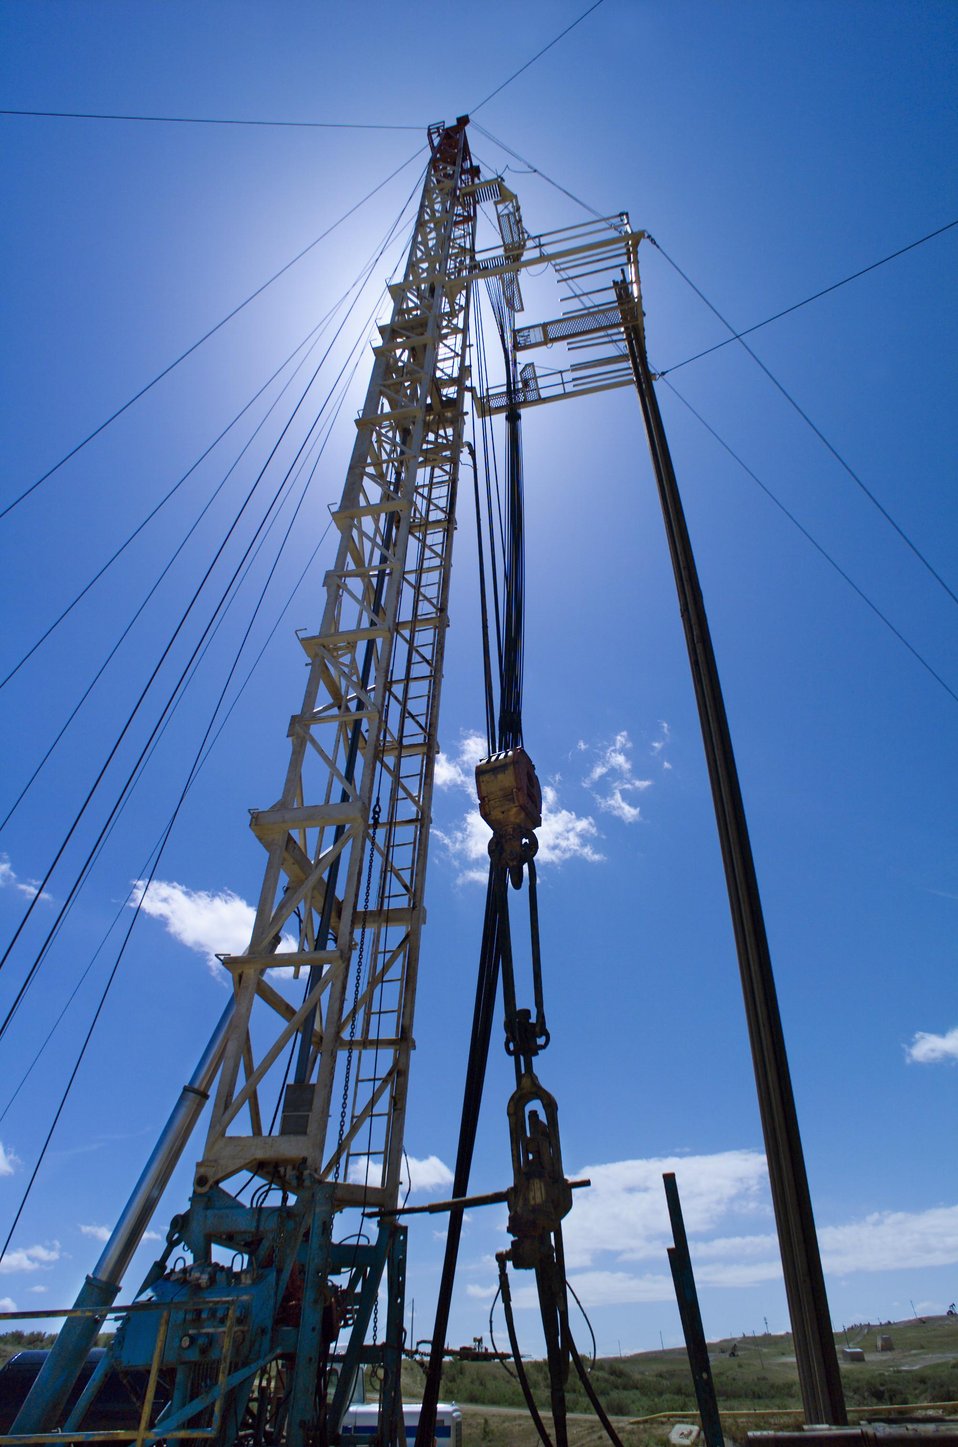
Work over rig at Naval Petroleum Reserve No.3 (NPR-3) near Casper, Wyoming.

The Rocky Mountain Oilfield Testing Center (RMOTC) is a Department of Energy field test site for emerging and developing technologies to address critical energy issues. The field test site, located on Naval Petroleum Reserve No.3 (NPR-3), is a 10,000-acre site. There are approximately 700 well bores with 600 producing wells ranging in depth from 500 to 5,000 feet.